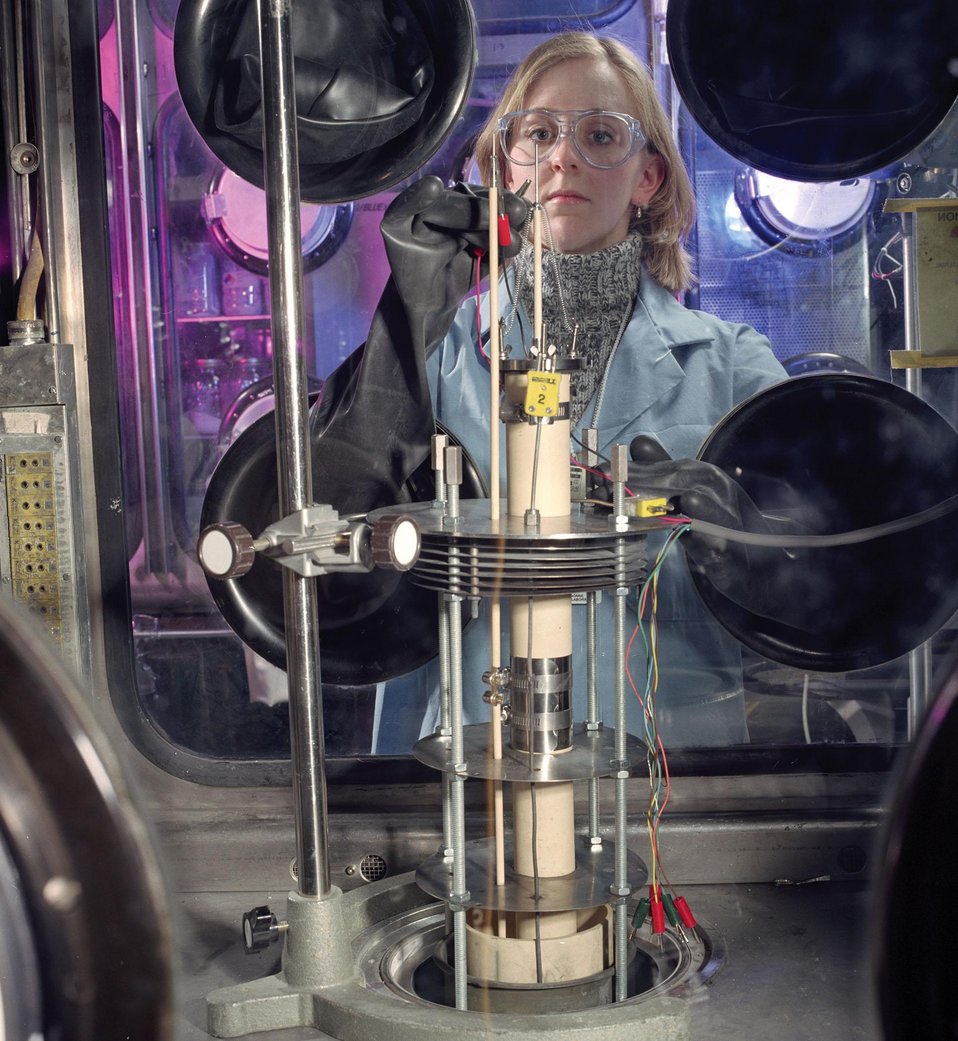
METAL OXIDE FOR ELECTRO REFINING IS BEING TESTED A GLOVE BOX BY ANL CHEMIST.

ARGONNE'S NEW APPROACH OF RECYCLING SPENT FUEL FROM COMMERCIAL NUCLEAR REACTORS IS DESIGNED TO HELP REDUCE NUCLEAR WASTE STORAGE SHORTAGES. THIS TECHNOLOGY CONVERTS SPENT COMMERCIAL FUEL, WHICH IS A CERAMIC OXIDE, INTO METAL. THEN IT CAN BE TREATED WITH ANL'S PYRO PROCESSING TECHNOLOGY TO RECOVER THE URANIUM AND PLUTONIUM FOR RECYCLING INTO NEW FUEL.